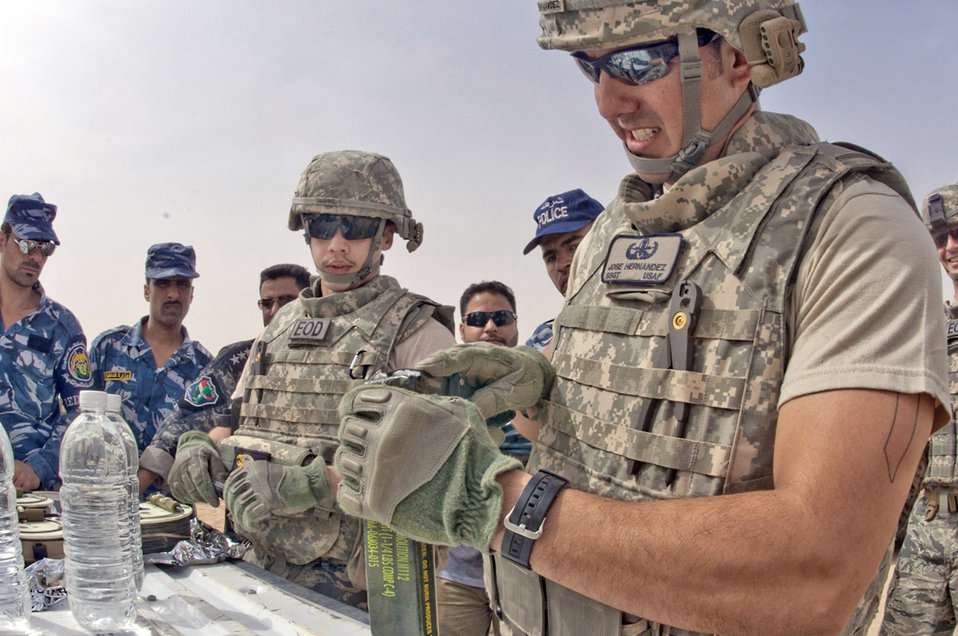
Airmen train Iraqi EOD squad

Tech. Sgt. Joe Hernandez and Airman 1st Class Stephen Alvarez demonstrate the use of C4 explosives in the construction of a water charge designed to disable an improvised explosive device to members of the Dhi Qar Province explosive ordnance police team March 11, 2010, at Ali Base, Iraq. Sergeant Hernandez and Airman Alvarez are on the 407th Air Expeditionary Group Explosive Ordnance Disposal team deployed from Luke AFB, Ariz.